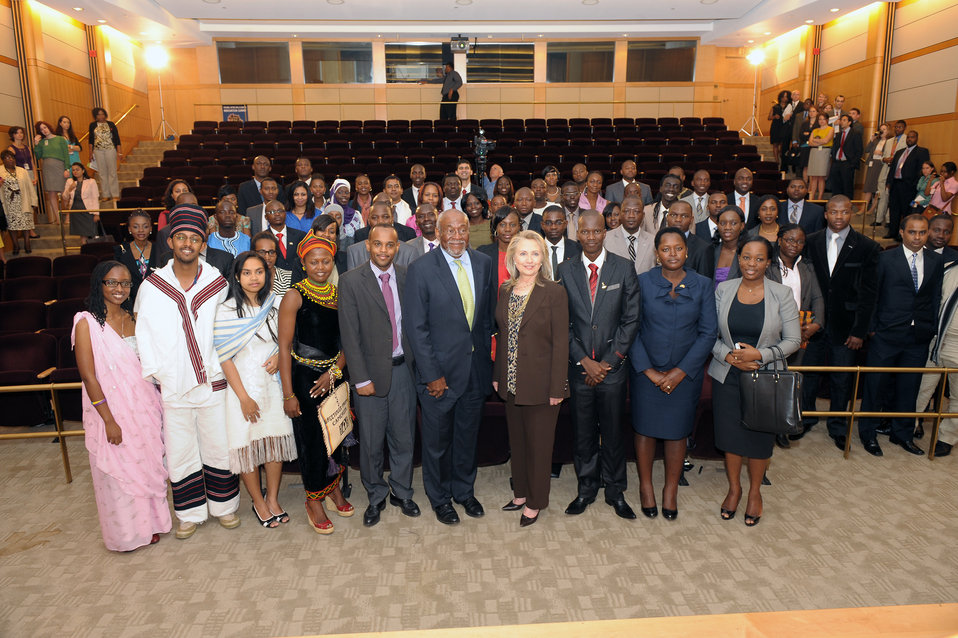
Secretary Clinton Poses for a Photo With Assistant Secretary Carson and Participants at the Innovation Summit and Mentoring Partnership with Young African Leaders

U.S. Secretary of State Hillary Rodham Clinton poses for a photo with Assistant Secretary of State for the Bureau of African Affairs Johnnie Carson and participants at the Innovation Summit and Mentoring Partnership with Young African Leaders at the Department of State in Washington, D.C. on June 13, 2012.